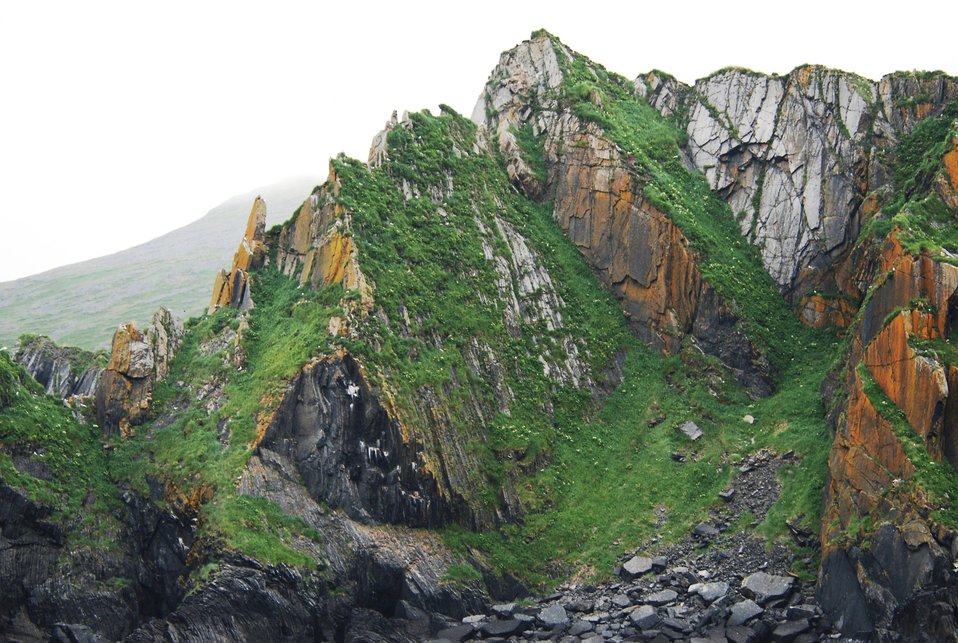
Highly inclined sedimentary beds. These beds are probably uplifted turbidites of Cretaceous age.